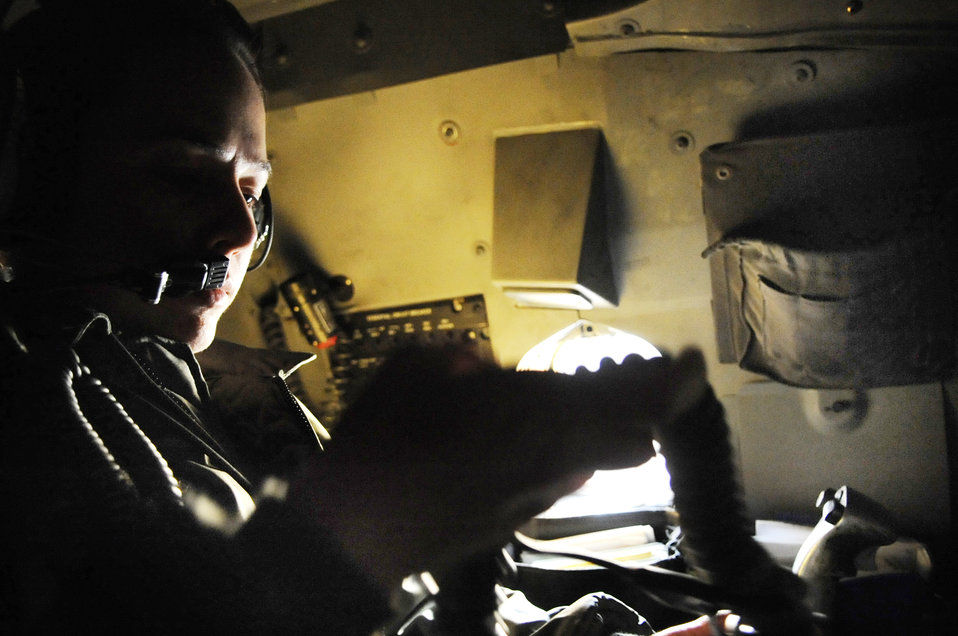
B-1s at Ellsworth

Capt. Kaylene Giri, a 34th Bomb Squadron weapons systems officer instructor at Ellsworth Air Force Base, S.D., proceeds through a preflight checklist at her WSO crew station in a B-1B Lancer Oct. 15, 2009. Capt. Giri, along with another WSO and the two pilots, perform pre-flight checks to ensure all systems are functioning before every mission.